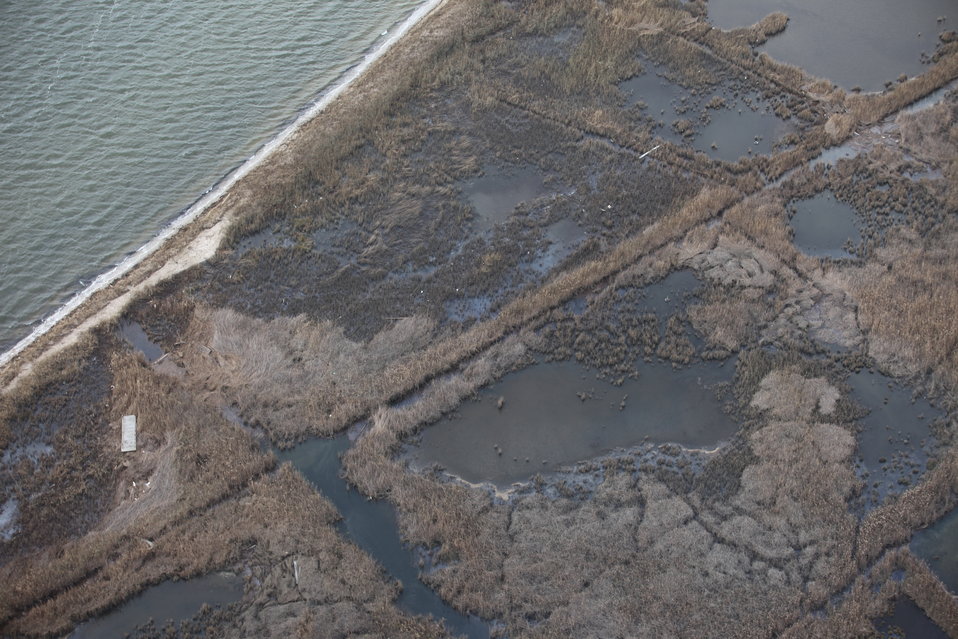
Aerial photo of debris in marsh at Seatuck National Wildlife Refuge (NY)

Marsh debris at Seatuck National Wildlife Refuge, part of the Long Island National Wildlife Refuge Complex.